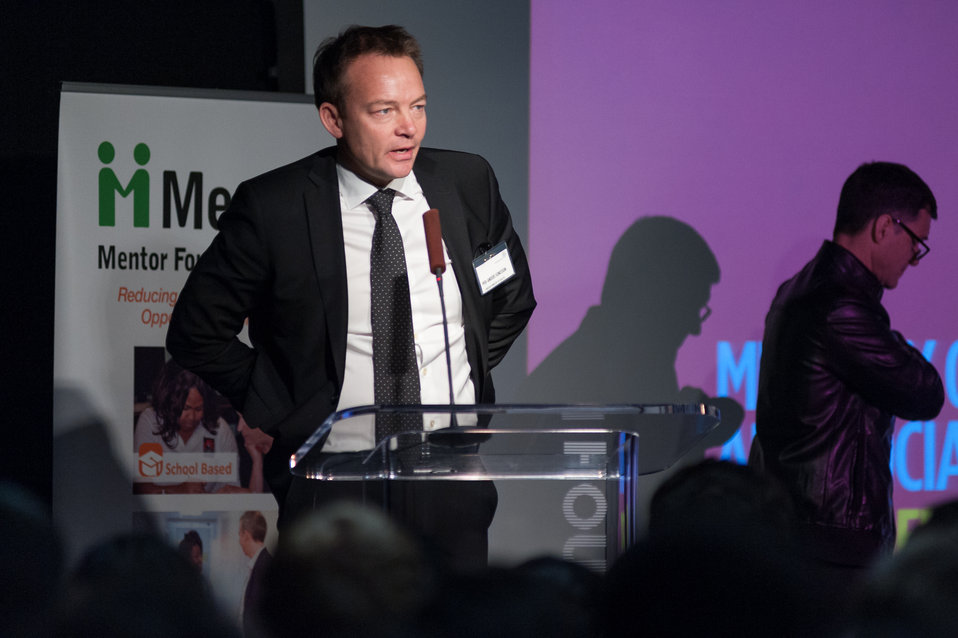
Mentor NDFW Event 2014

Mentor Foundation USA, in partnership with the National Institute on Drug Abuse (NIDA) and other key partners hosted a Youth Drug Facts Rally at the House of Sweden on Thursday, 30th January 2014. Approximately 200 students from five local high schools attended and had the opportunity to interact with top U.S. scientific experts and inspiring guest speakers to “shatter the myths” about drugs and substance abuse, while pledging to stay drug-free.